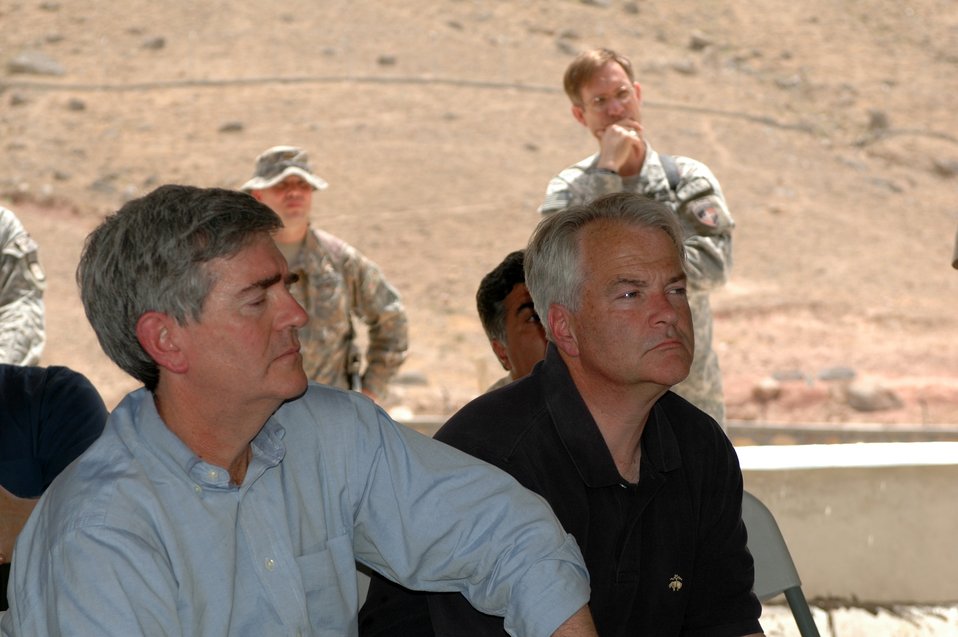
CODEL Berman